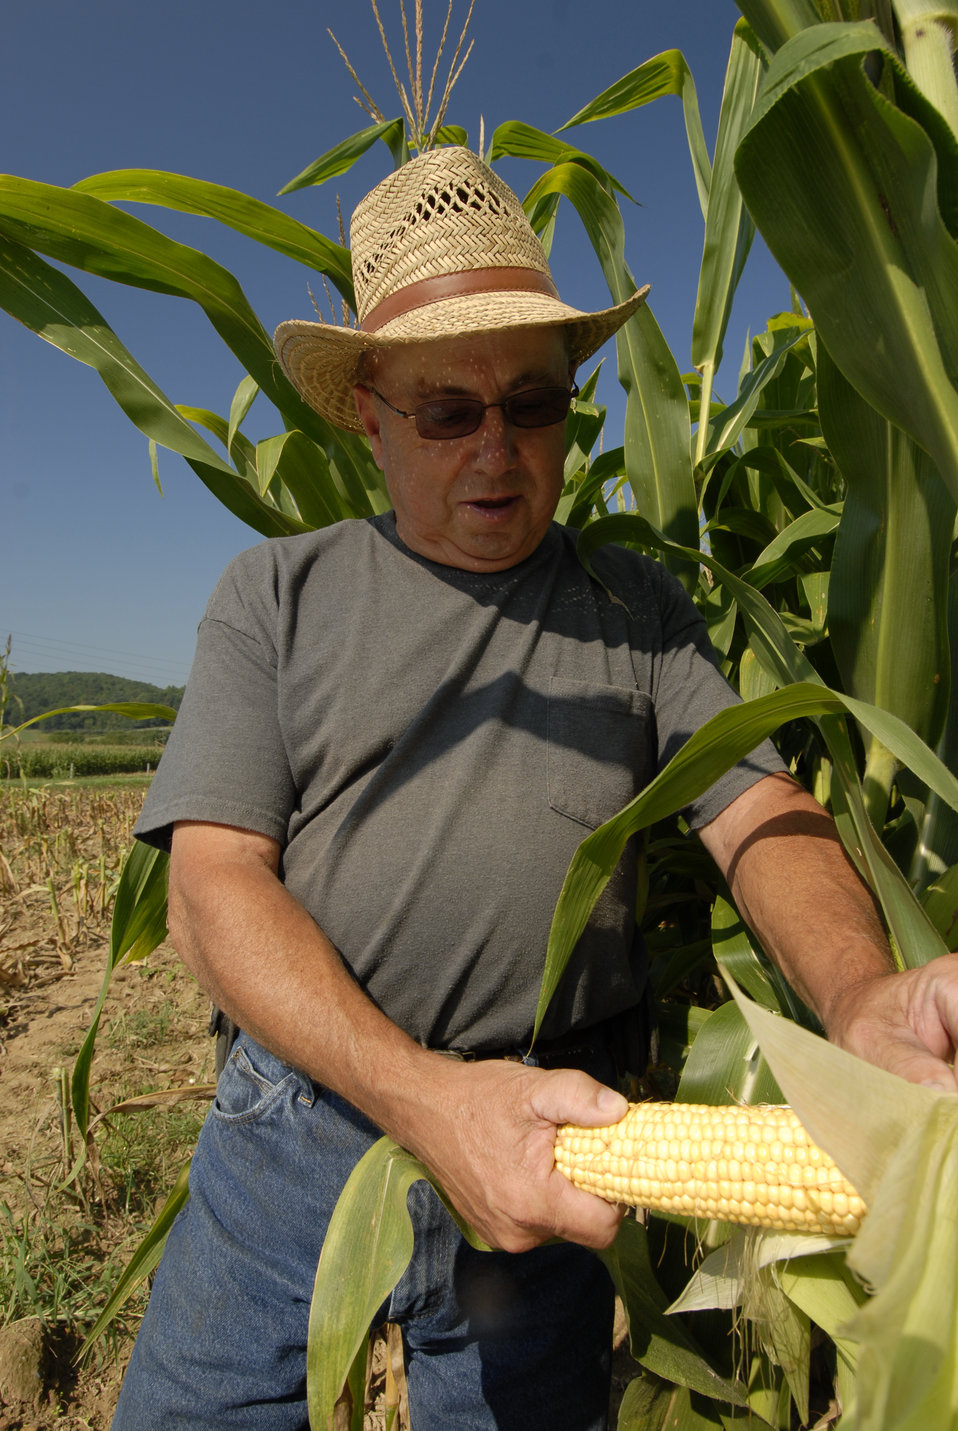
A farmer in Augusta County, Virginia examines his corn crop on September 7, 2008.